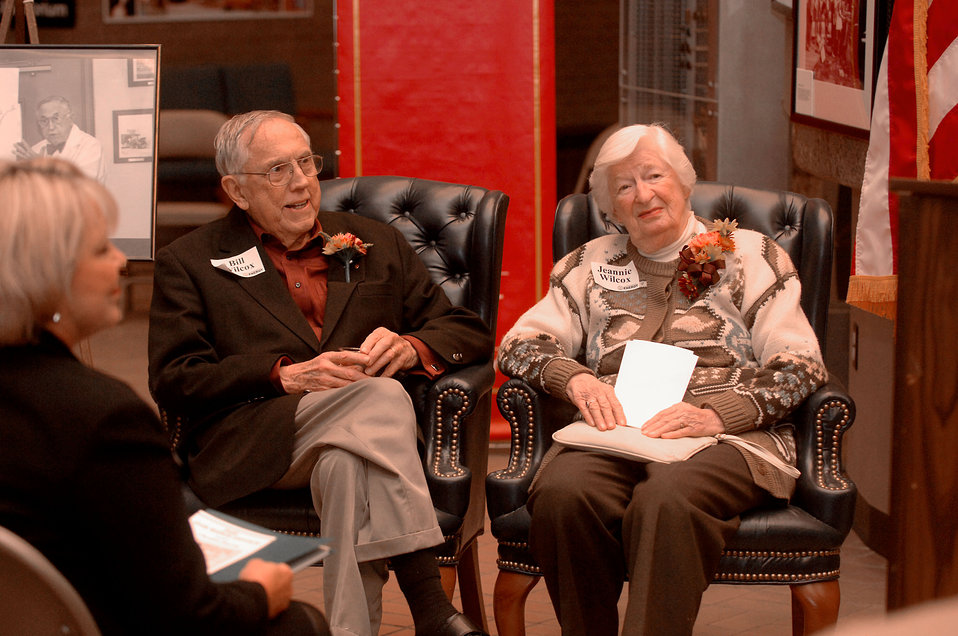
Bill Wilcox Secretary Of Energy Appreciation Award Oak Ridge 2008

08-230 DOE photo Lynn Freeny 10-28-2008 L to R Bill and Jeannie Wilcox Oak Ridge Tennessee